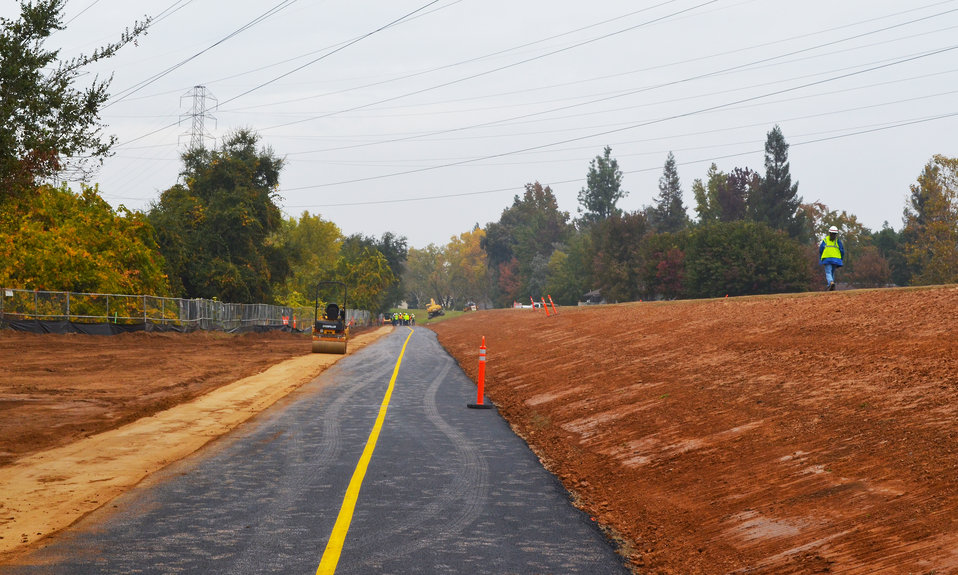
A view of the newly repaved American River Parkway trail near the California State University-Sacramento campus in Sacramento, Calif., shown Nov. 16, 2012. Construction representatives with the U.S. Army Corps of Engineers Sacramento District inspected the remaining asphalt work as one of the last steps before the heavily-used recreational trail can reopen later this month. A detour was necessary while levee construction proceeded along the American River during the summer. The work is part of the American River Common Features project, a joint effort between the Corps, the state’s Central Valley Flood Protection Board and the Sacramento Area Flood Control Agency to reduce flood risk for Sacramento.